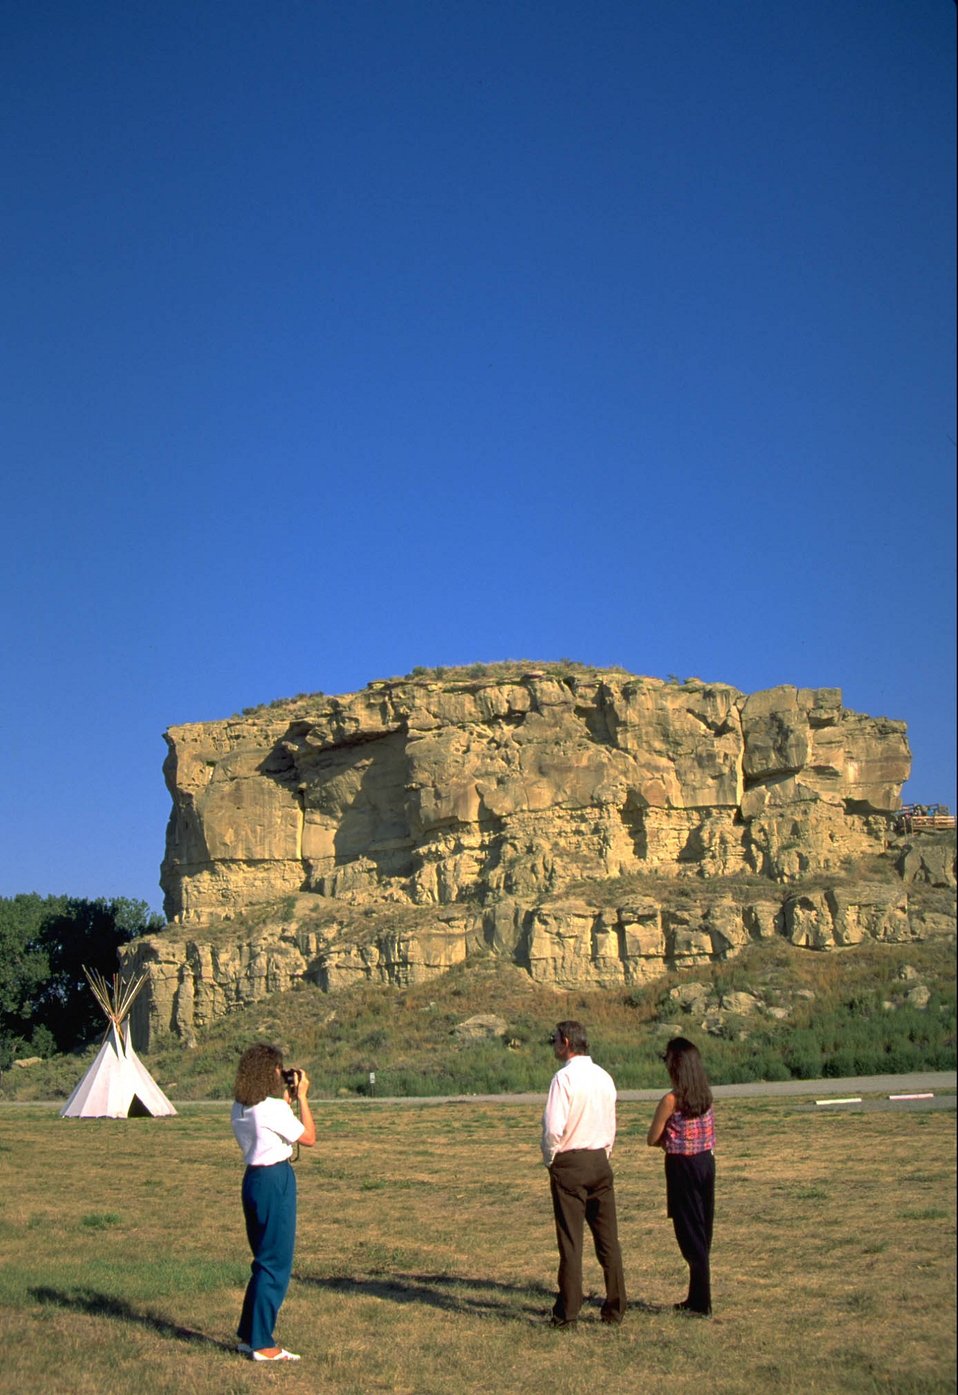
Pompeys pillar wth tourists in foregroud